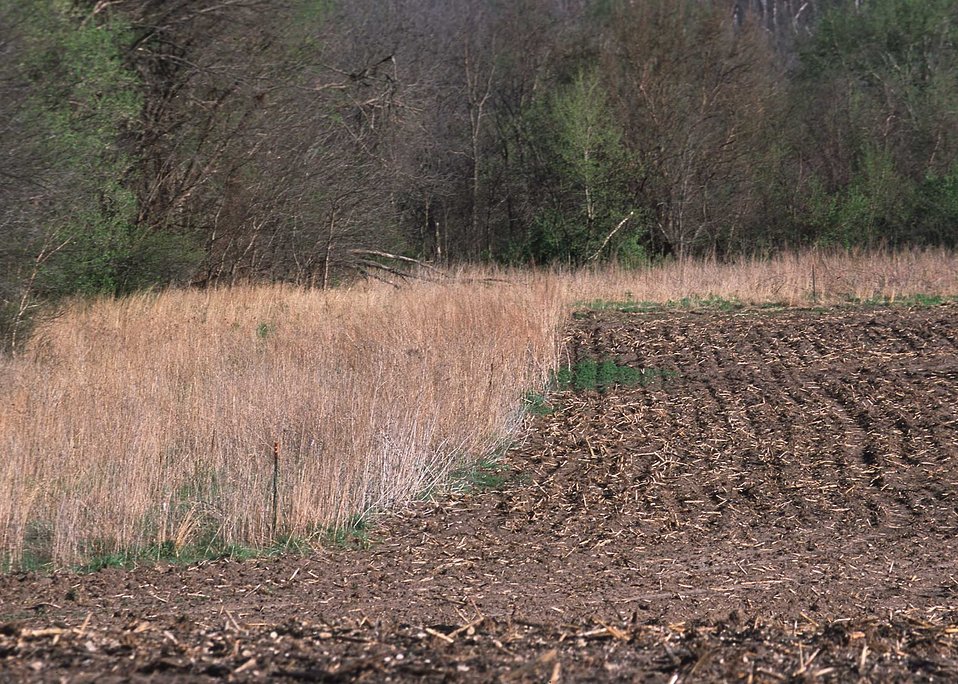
Conservation buffers seeded to Prairie grasses border riparian habitat and a cultivated field. Kansas.